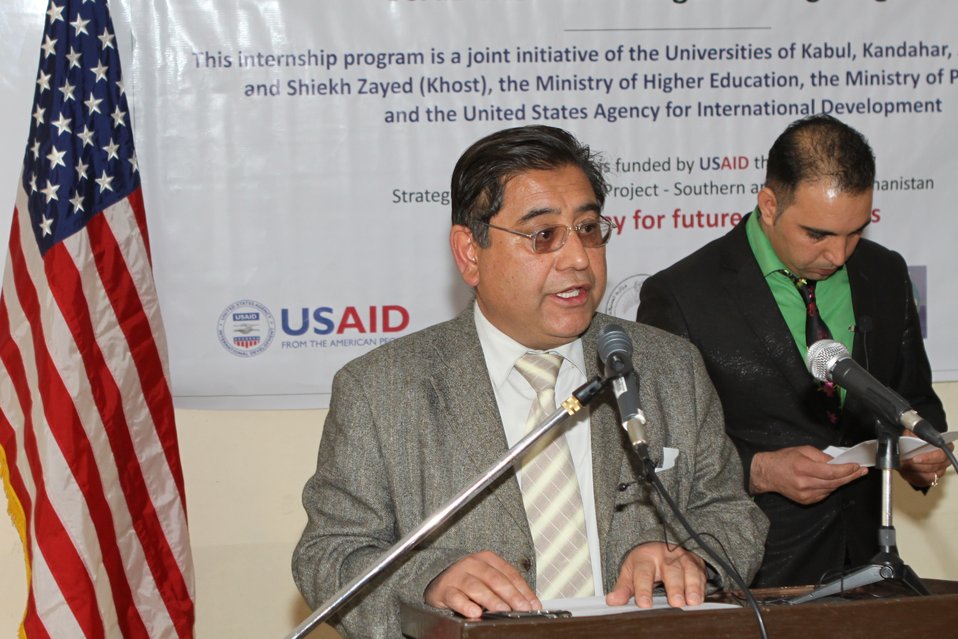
Female University Students Complete Internship

Kabul, Afghanistan | March 16, 2011 – In response to a demand for qualified Afghan engineers, Kabul University celebrated completion of an intensive five-month Mentor Protégé Training Program today by 10 female fourth year university students. The Training Program is a joint effort between the Government of the Islamic Republic of Afghanistan, the U.S. Agency for International Development (USAID), and the Universities of Kabul, Kandahar, Alberoony in Kapisa, Shiekh Zayed in Khost. The graduation ceremony highlighted collaboration with these national institutions in building the technical skills of young Afghans, made possible by USAID.

Four of the interns are engineers, while the remaining six are from the faculties of computer science, economics, and psychology.

Speaking about the event, H.E. Minister of Public Works Abdul Qudus Hamidi said, “The future of Afghanistan lies in developing the skills of our youth, and the engineering skills of these graduates today represent a small but important step forward for the country.”

Keynote speakers at the ceremony included H.E. Deputy Minister of Higher Education Abdul Rahim; USAID Senior Deputy Mission Director Robert Hellyer; and Chancellor of Kabul University Professor Hamidullah Amin. Approximately 150 people, including current and former students attended the graduation.

Launched last year, the Mentor Protégé Training Program has provided qualifying students the opportunity to intern with USAID’s Strategic Provincial Roads-South and East Afghanistan project and gain practical experience in a real work environment. The goal of the program was to offer interns the opportunity to gain hands-on experience to reinforce their formal studies. A total of 30 students from four national universities have benefitted from this program.

“The promotion of women’s rights is integrated into the overall U.S. Government development strategy and can be found in key programs, including education, healthcare, security, rule of law, political participation, agriculture, and economic development,” said Robert Hellyer. “The U.S. Government is committed to the Afghan leadership of programs that directly enhance development, particularly as it relates to women’s issues.”

This event also highlighted the learning achievements of students and emphasized the importance of hands-on internship programs. The curriculum is designed to instill students with the knowledge and confidence to qualify for engineering positions upon completion of their fourth year at their respective universities.